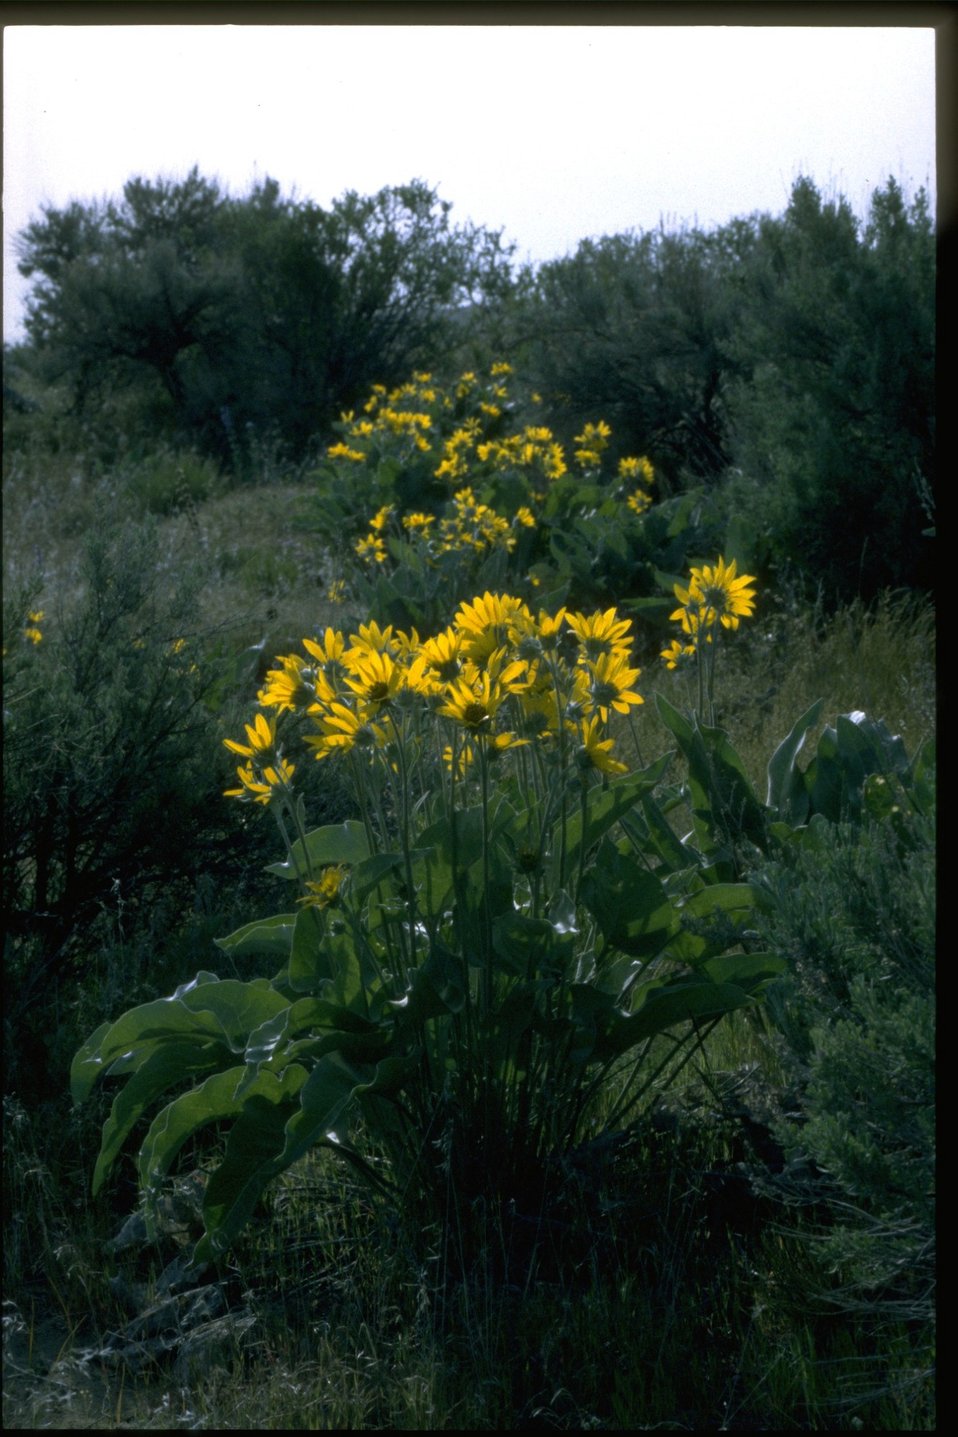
Arrowleaf Balsam Root (Balsamorhiza sagittata) habitat.